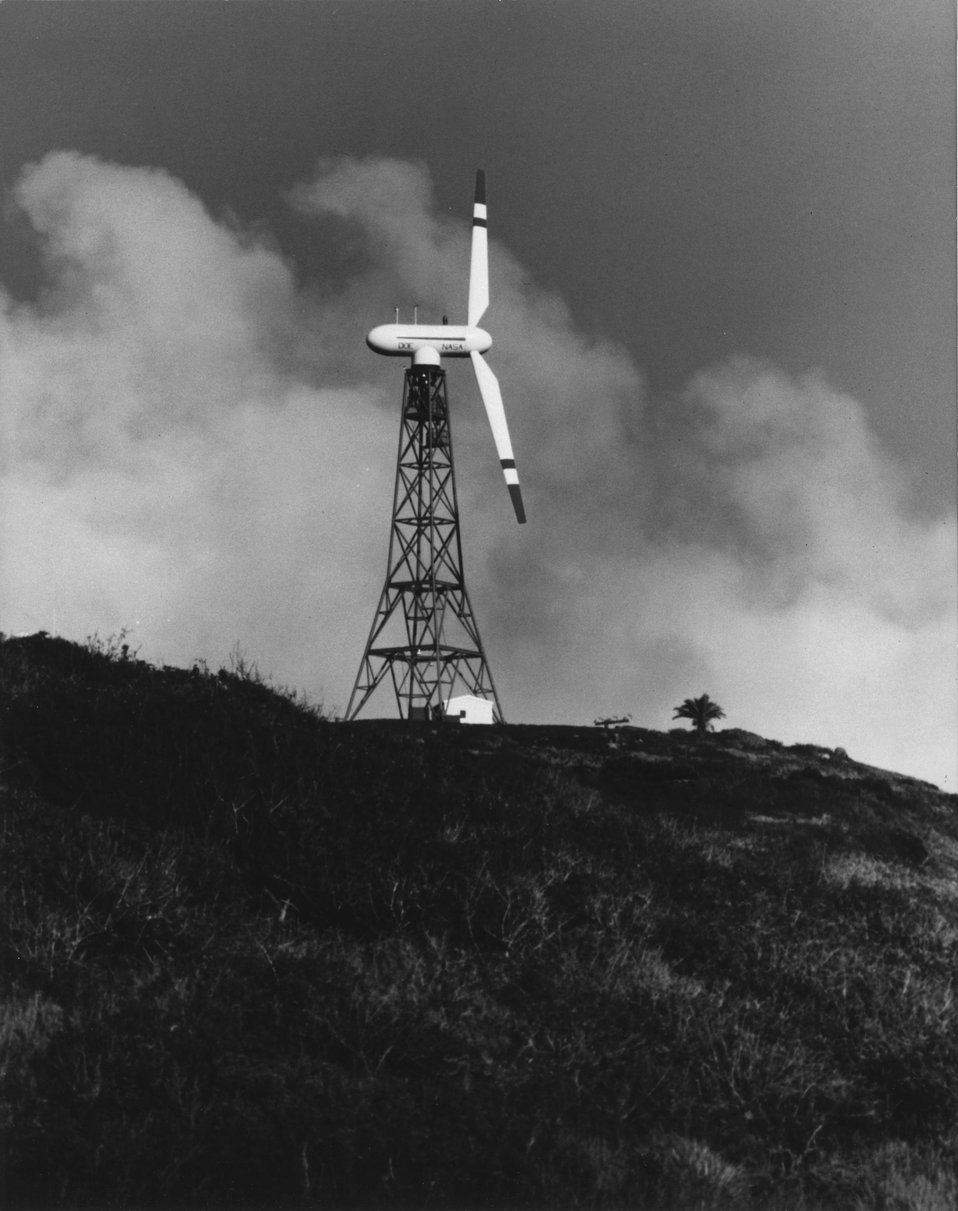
The ocean breezes off the north shore of Oahu, Hawaii, known for producing giant waves for the world's best surfing, now will be captured and converted into electricity. c. 1980